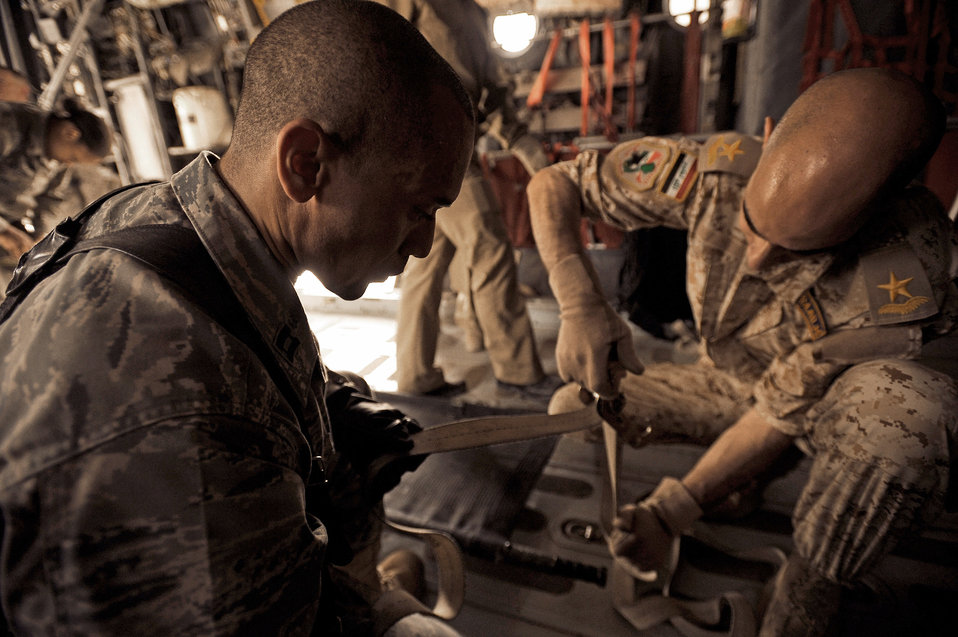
Advisors from 3 bases converge for evacuation training

Capt. Reggie Brown (left) teaches his Iraqi counterparts how to secure a litter to the floor of a C-130 Hercules May 19, 2011. Six Iraqi medics learned the basics of aeromedical evacuation over two days with Air Force and Army advisers from Sather Air Base, Joint Base Balad and Camp Taji. The medics also learned about medical evacuation capabilities and safety considerations for UH-60 Blackhawk, Mi-171 Hip and UH-1 Huey helicopters. Captain Brown is deployed from Eglin Air Force Base, Fla., and hails from Long Island, N.Y. Captain Brown is a 332nd Expeditionary Medical Group critical care nurse.